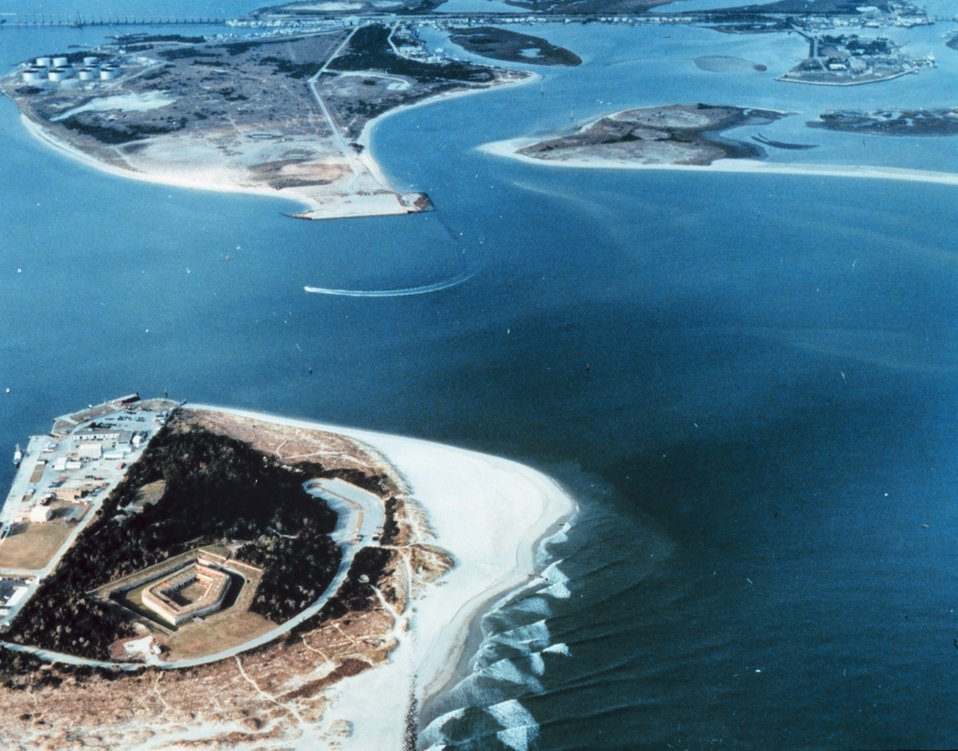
3443 North Latitude 7644West Longitude.